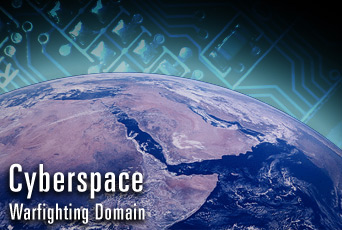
Cyber Summit

The Air Force continues to operationalize cyberspace as a warfighting domain.